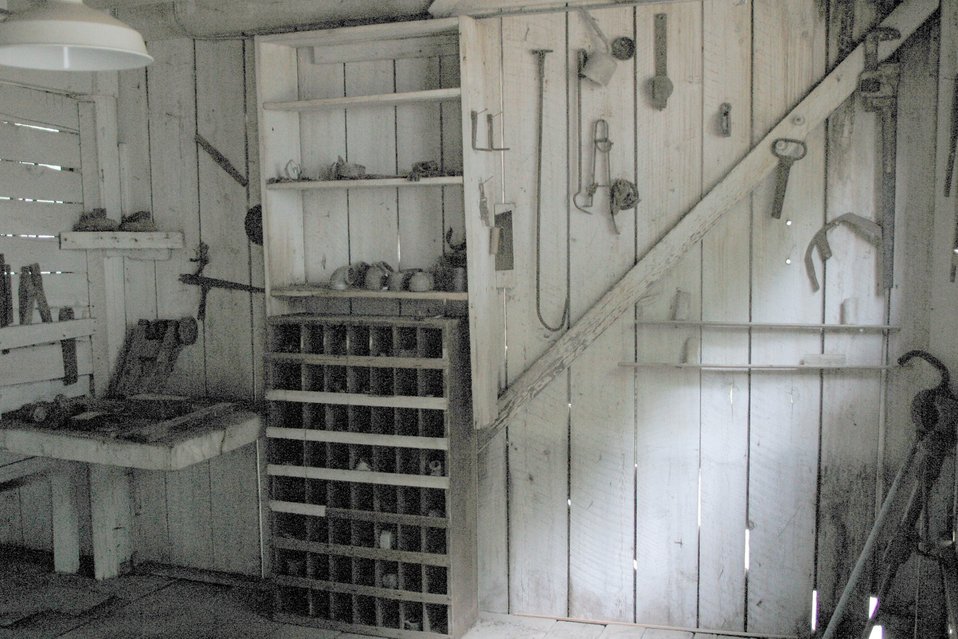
An interior view of the Tabernacle at the Rogue River Ranch.